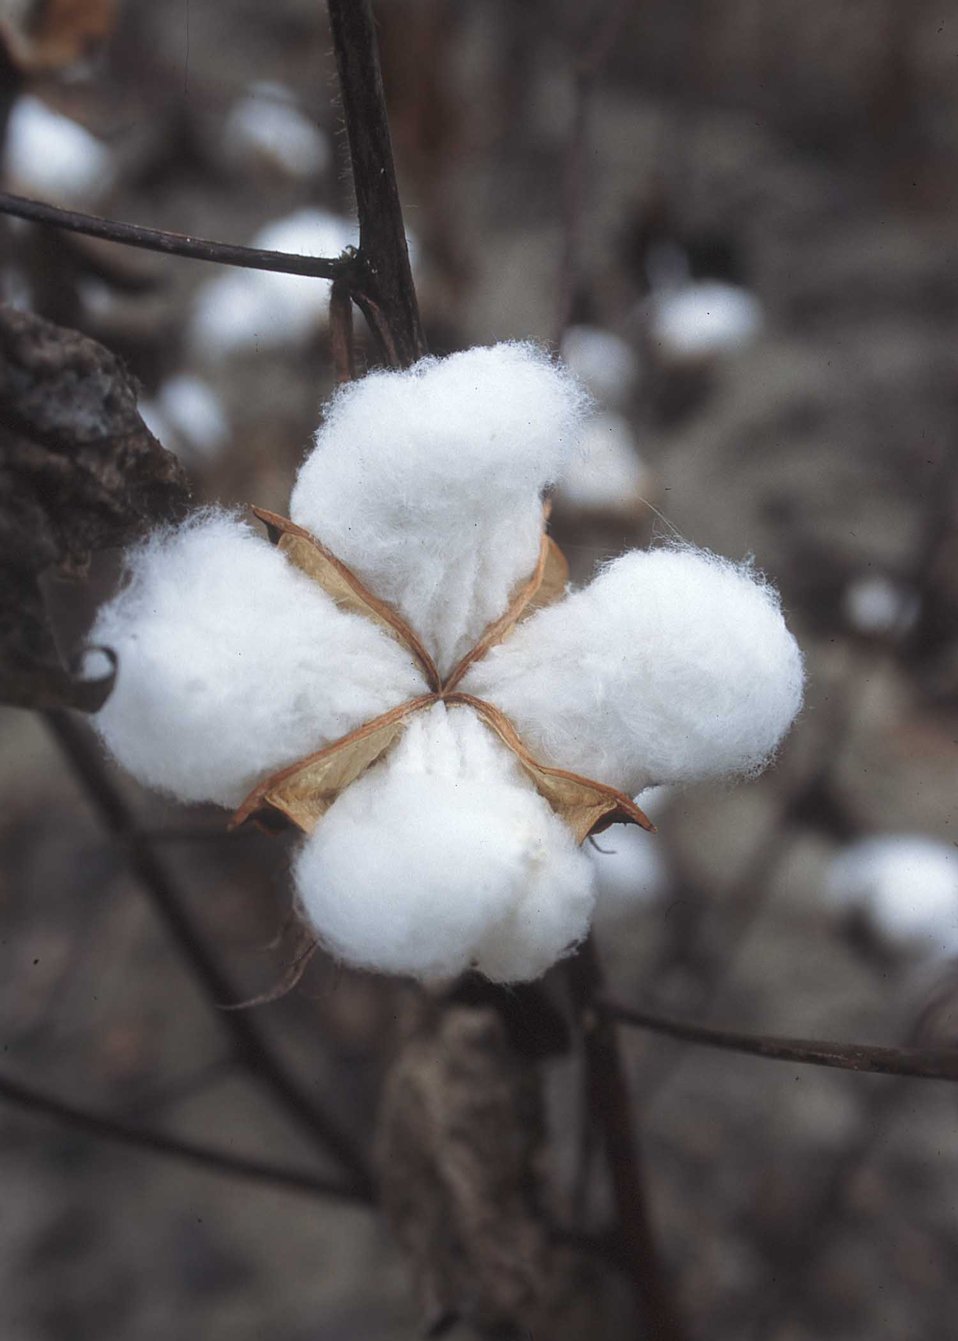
Close-up of a cotton plant, Texas.